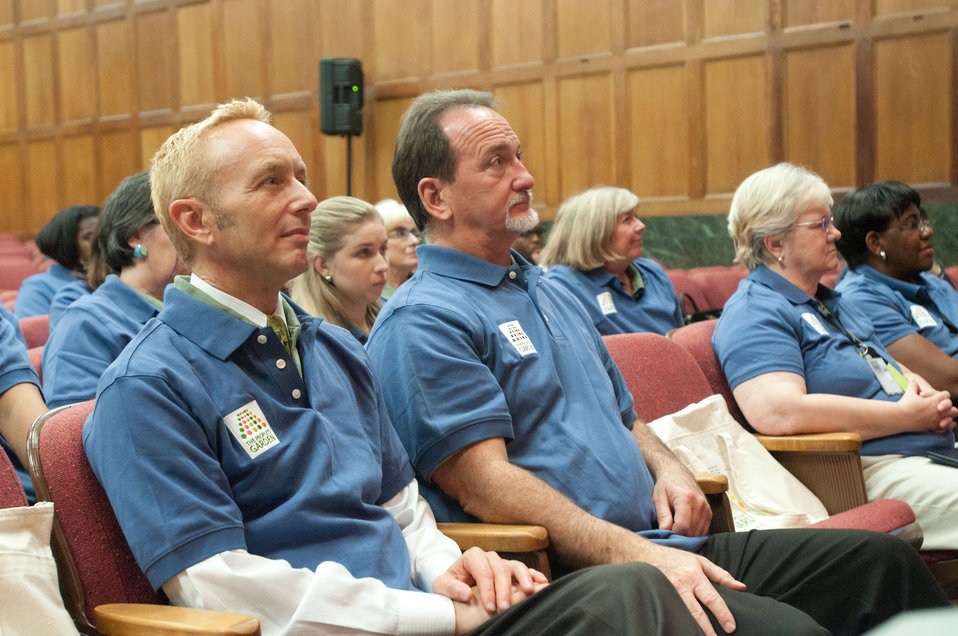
Graduation day of the 2011 U.S. Department of Agriculture (USDA) Executive Master Gardeners, on Tuesday, November 8, 2011 in Washington, DC. During the past six-weeks, students contributed 40-hours of volunteer time, completed studies and testing to receive their certificates today as an Executive Master Gardener. Many of the sessions occurred before work hours, during lunchtime or at community garden project sites such as Powell Middle School. USDA challenges its employees to establish People's Gardens at USDA facilities worldwide or in community gardens. People's Gardens vary in size and type, but all have a common purpose - to help the community and the environment. To learn about the People’s Garden Initiative visit www.usda.gov/wps/portal/usda/usdahome?contentid=peoples g....